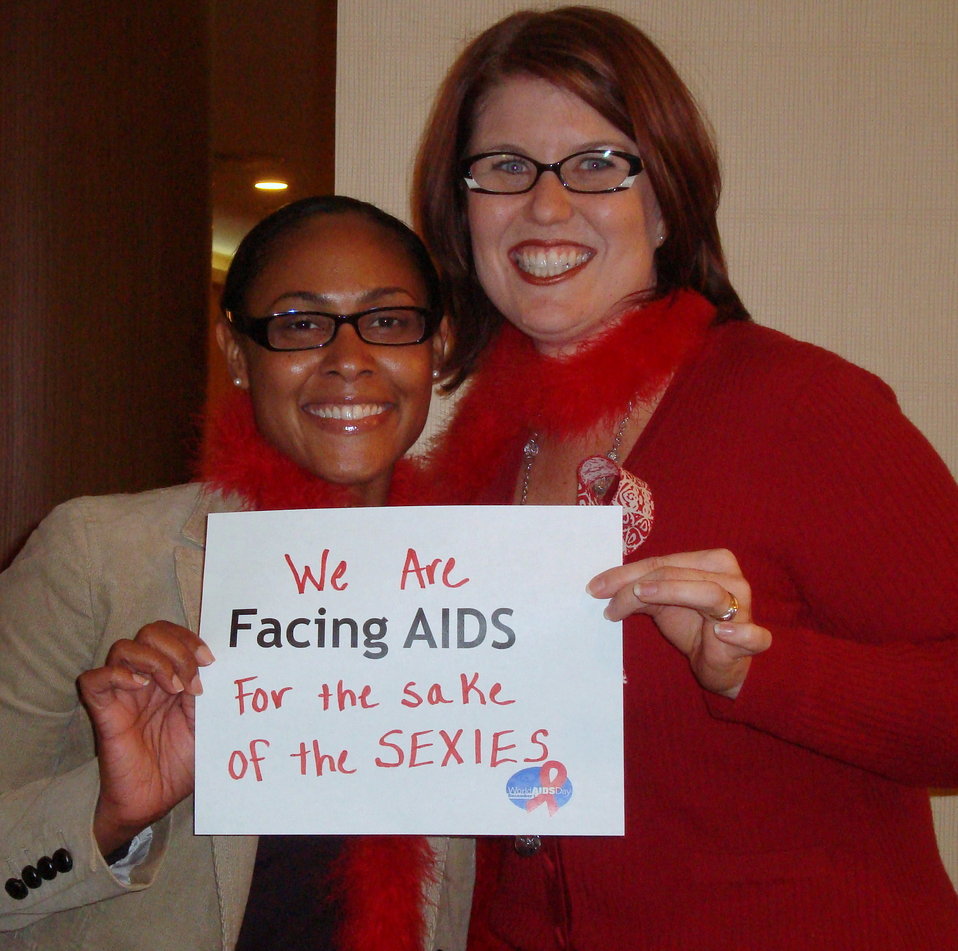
FacingAIDSCampaign 053